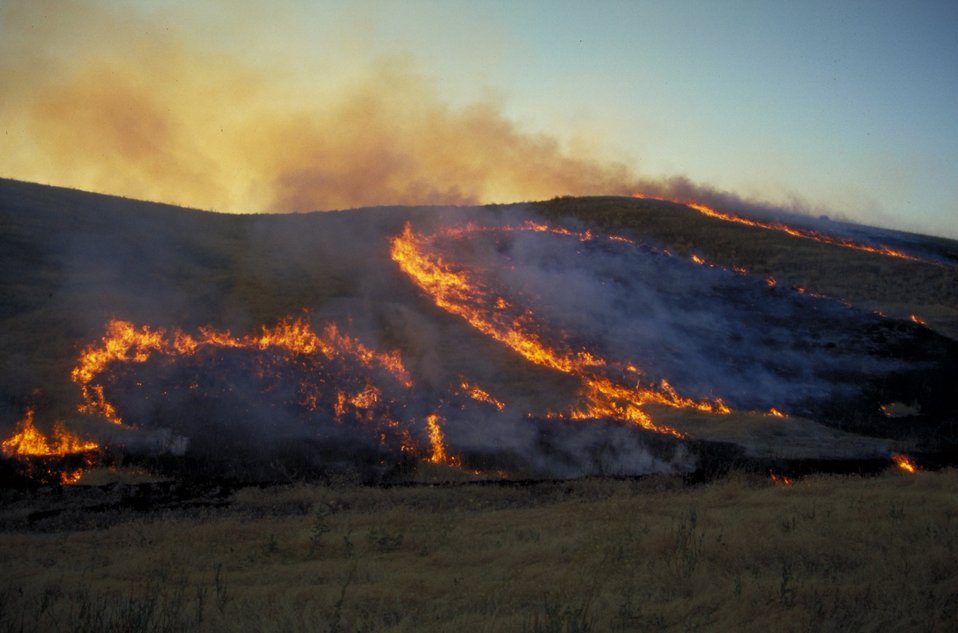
Prescribed burn Fire Season 2000 Lower Snake River District LSRD